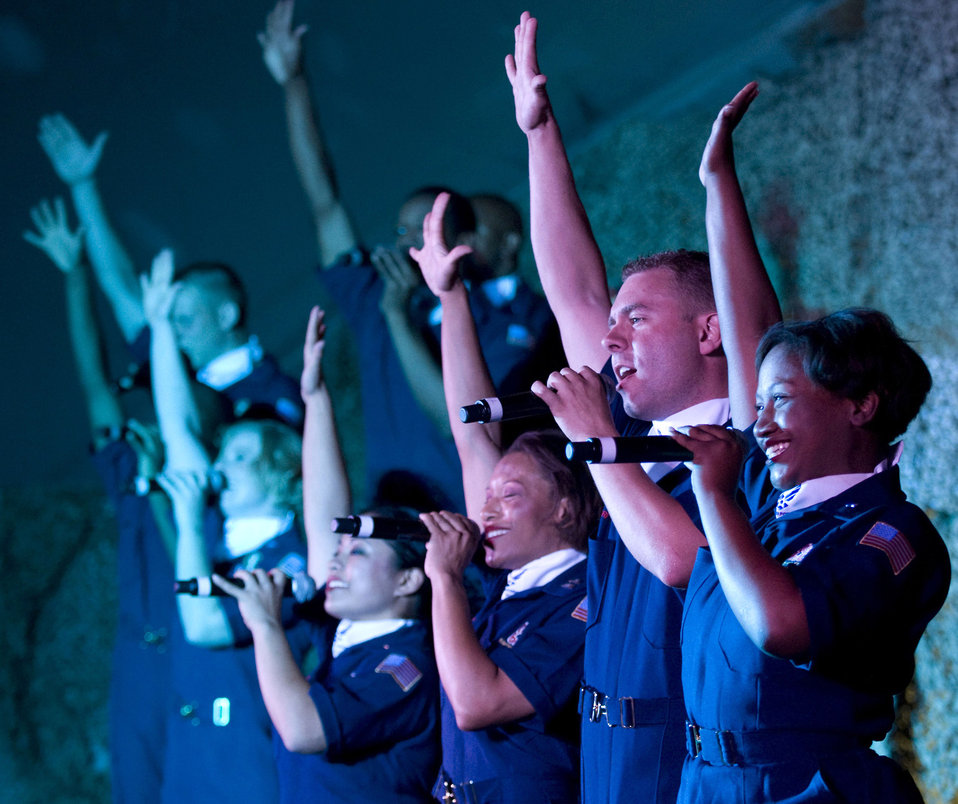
Hitting the high notes

Tops in Blue vocalists strike a pose during the